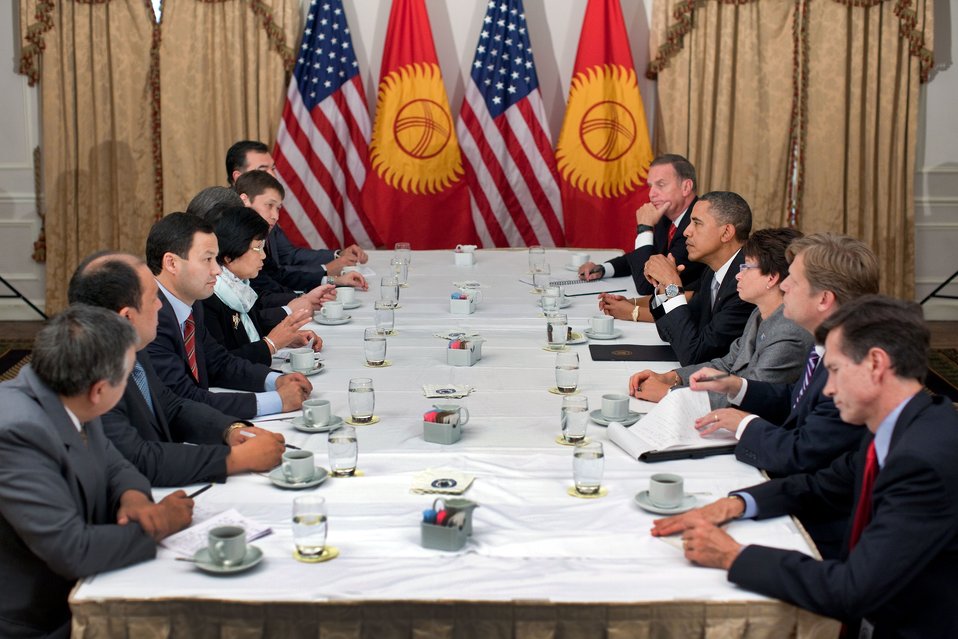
President Obama Holds a Bilateral With Kyrgyzstan President Otunbayeva

U.S. President Barack Obama holds a bilateral meeting with President Roza Otunbayeva of Kyrgyzstan and the Kyrgyzstan delegation in New York, New York, on September 24, 2010. U.S. National Security Advisor James L. Jones is seated at the end of the table on the right side and U.S. Assistant Secretary Robert O. Blake is seated closest to the camera on the right side.